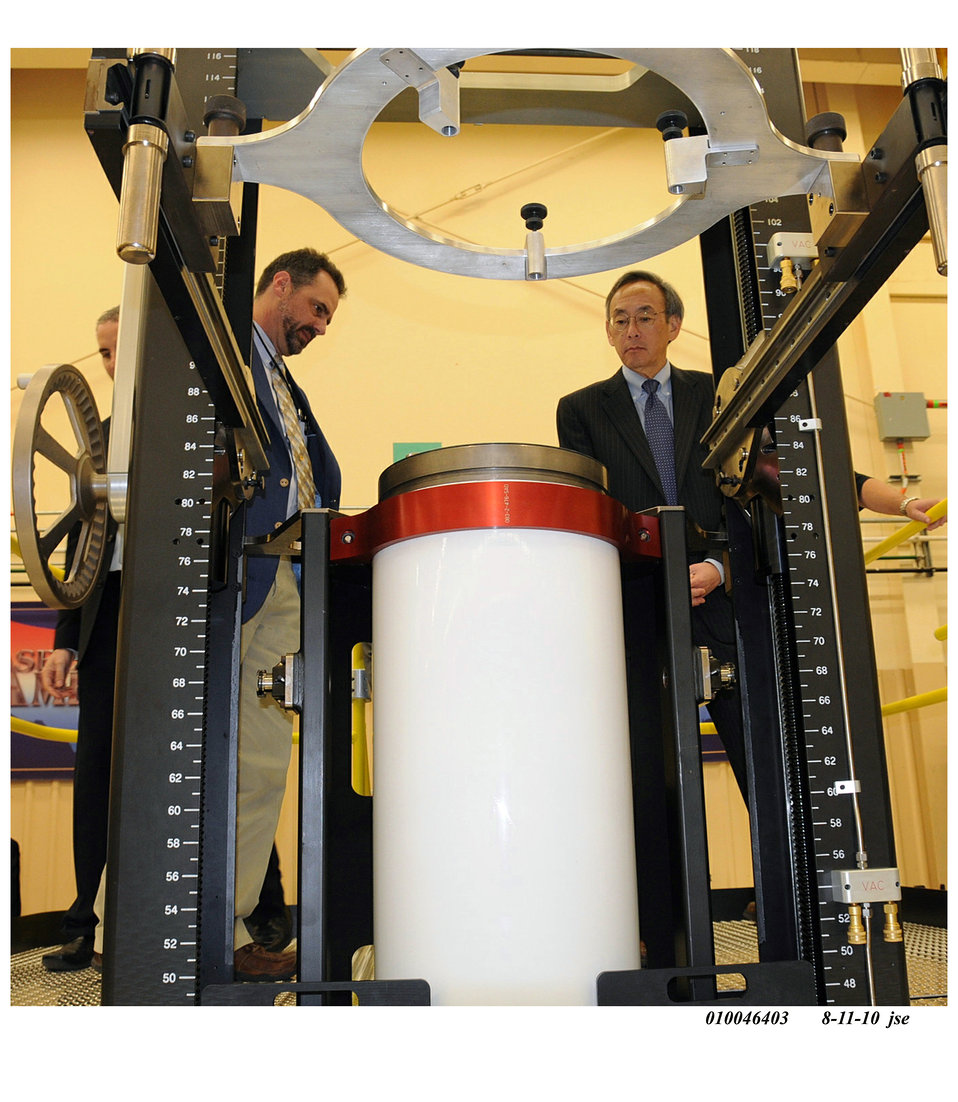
Pantex Plant manager Steve Erhart briefs Secretary Chu on special tools developed for NNSA’s life extension and dismantlement programs during a visit to NNSA’s Pantex Plant. (Aug. 11, 2010)